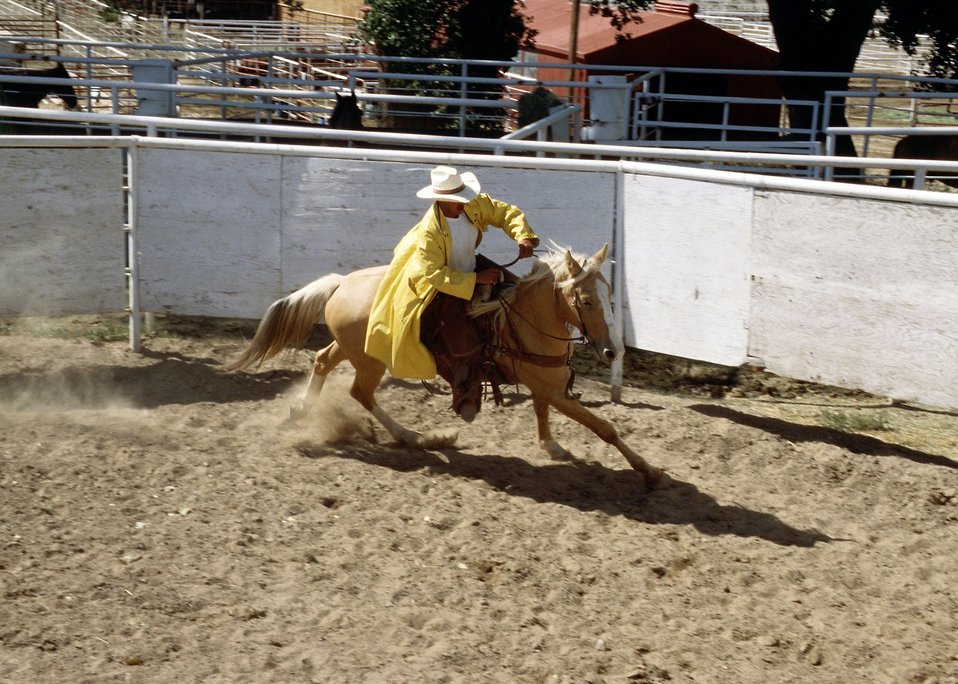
Wild Horse/w Rider